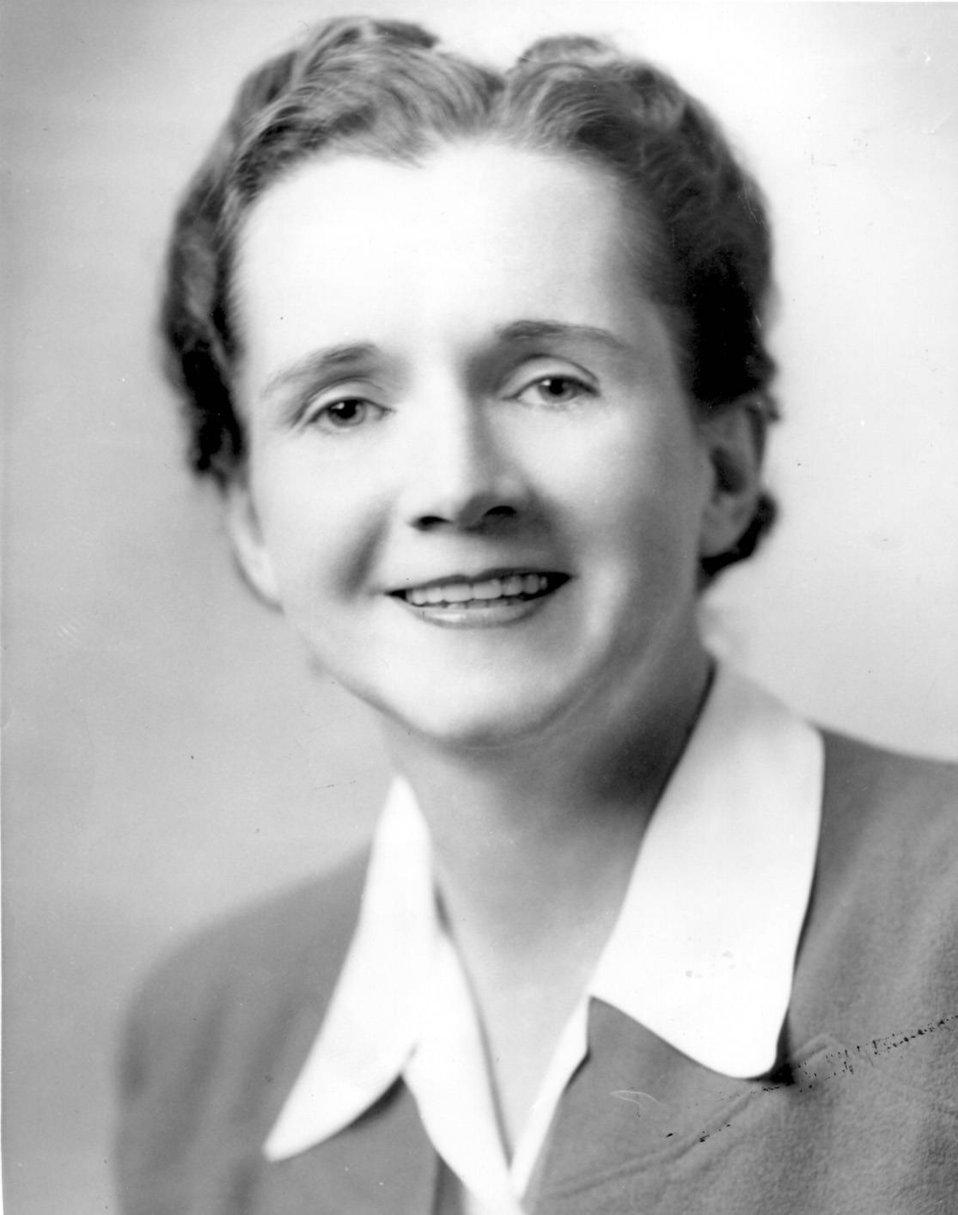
Rachel Carson

The author of Silent Spring (1962), the book that forced the nation to confront the toll of pesticides on the environment, Carson began her career with the U.S. Fish and Wildlife Service. A refuge on the southern coast of Maine now bears her name. (USFWS)